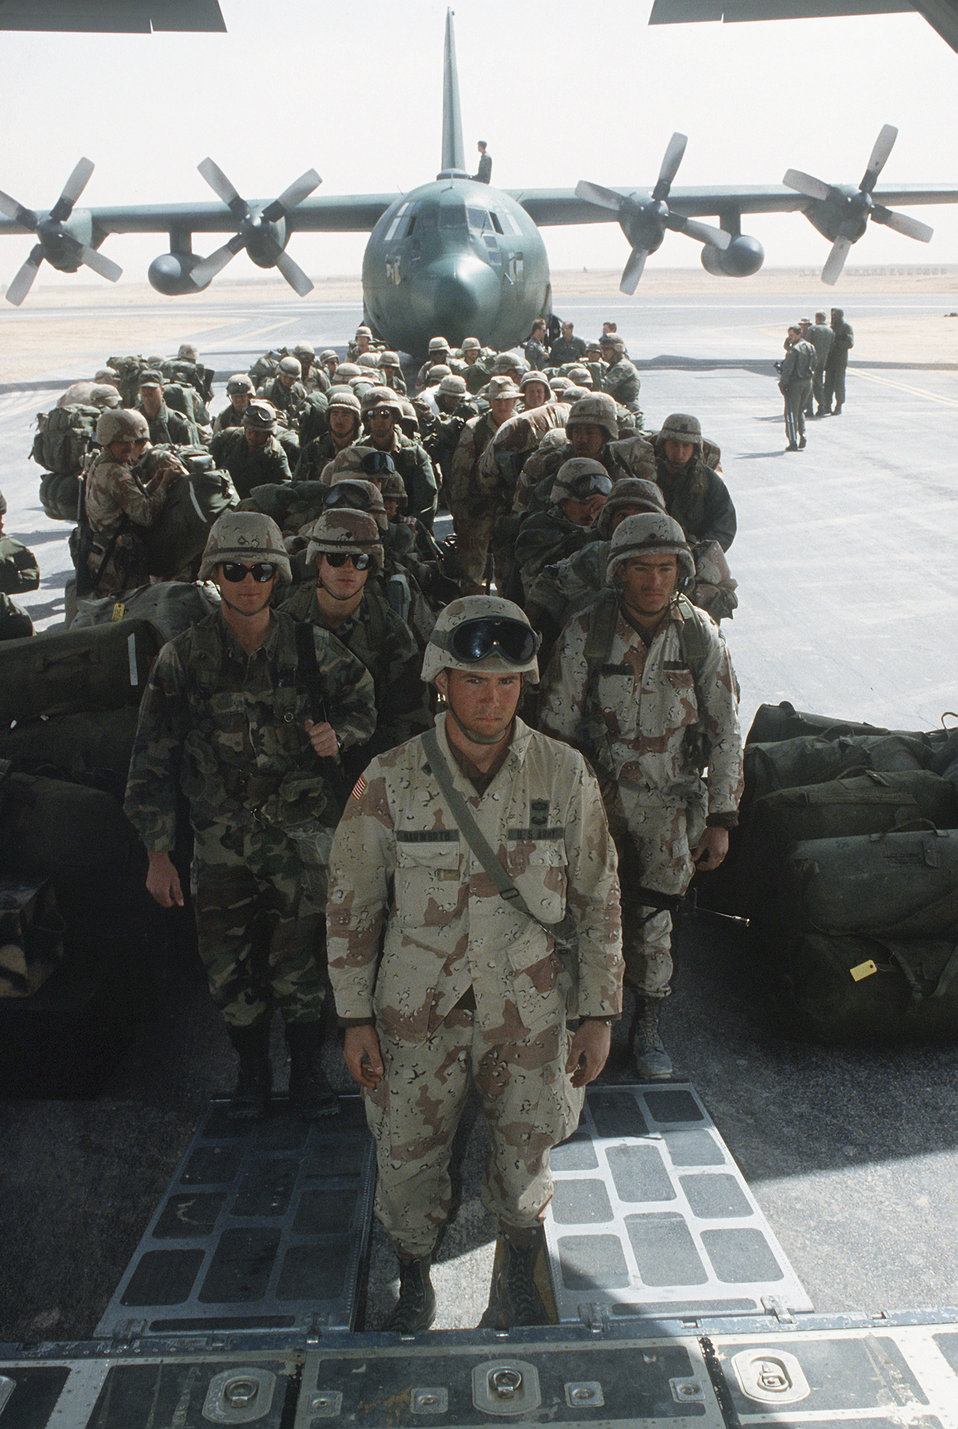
C-130 Hercules transport aircraft

1990's -- Troops of the U.S. Army's XVIII Airborne Corps wait to board a C-130 Hercules transport aircraft of the 1630th Tactical Airlift Wing for a transit to Fort Bragg, N.C., following the liberation of Kuwait during Operation Desert Storm. Behind the troops is another C-130 Hercules aircraft.